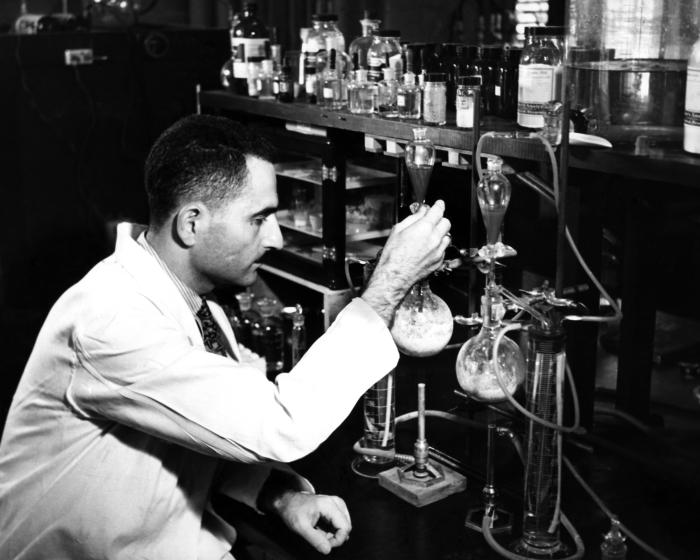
This November, 1943 photograph was provided by the Center for Disease Control's (CDC), National Institute for Occupational Safety and Health (NIOSH). The image depicted a doctor who was analyzing blood samples for the presence of xyledine, also known as xylidine (dimethylaniline), which is a chemical used in the creation of dyes, acting as a dyestuff intermediate. The chemical is also used in the blending of gasoline mixtures. Exposure to xylidine can occur via inhalation, ingestion, eye contamination, or by absorption through the skin. Based on effects seen in animals, xylidine is a potential human carcinogen. This man was not wearing a protective filtered breathing mask, goggles, or gloves while carrying out these experiments.